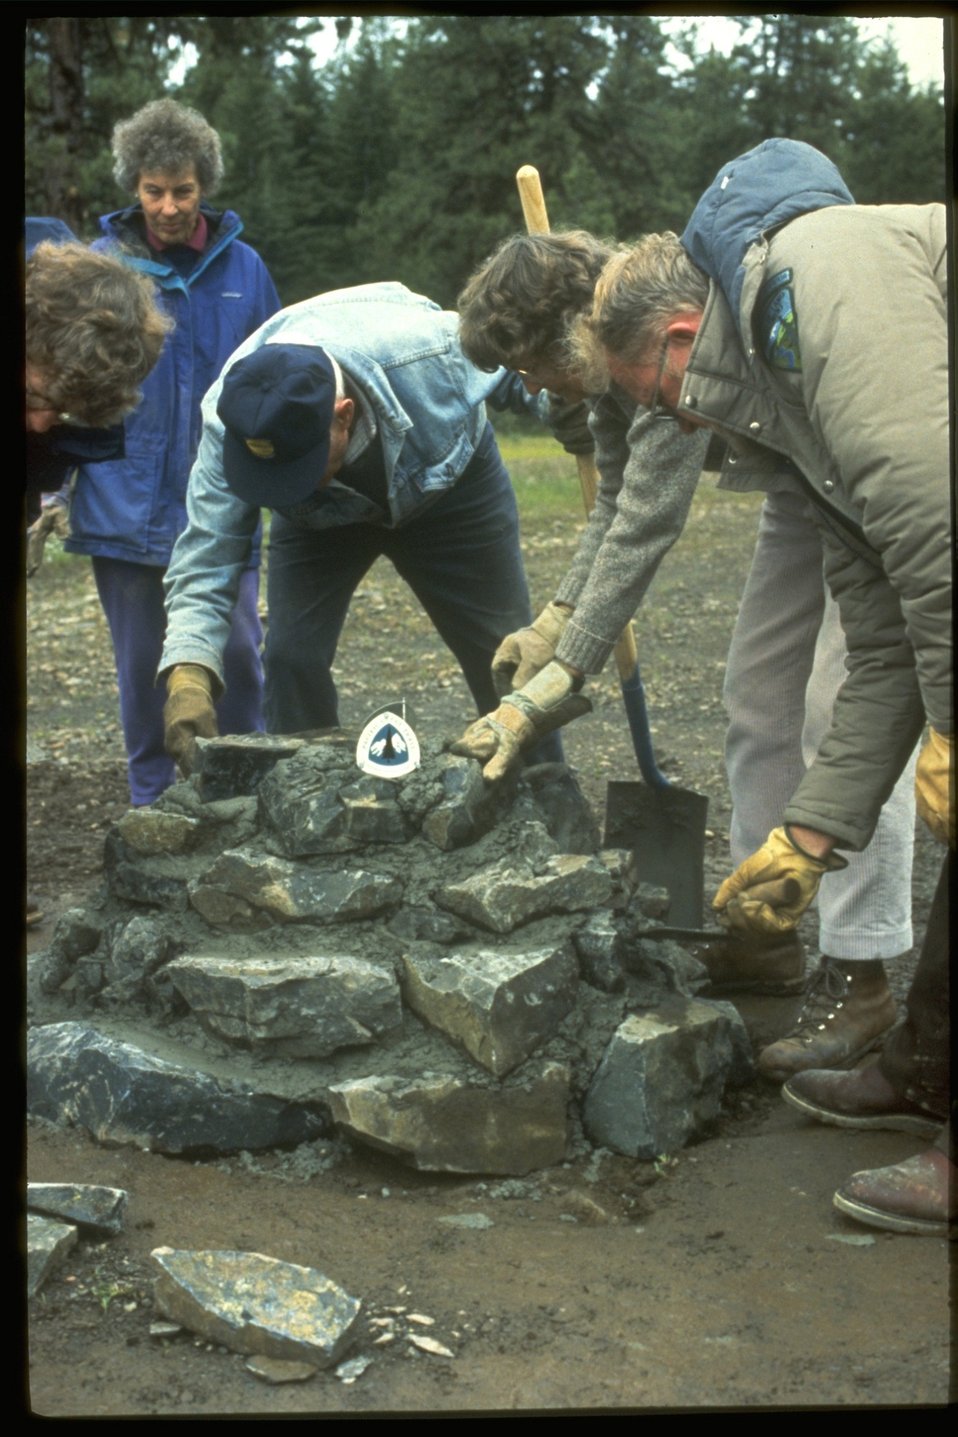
Trail volunteers on the Pacific Crest Trail.